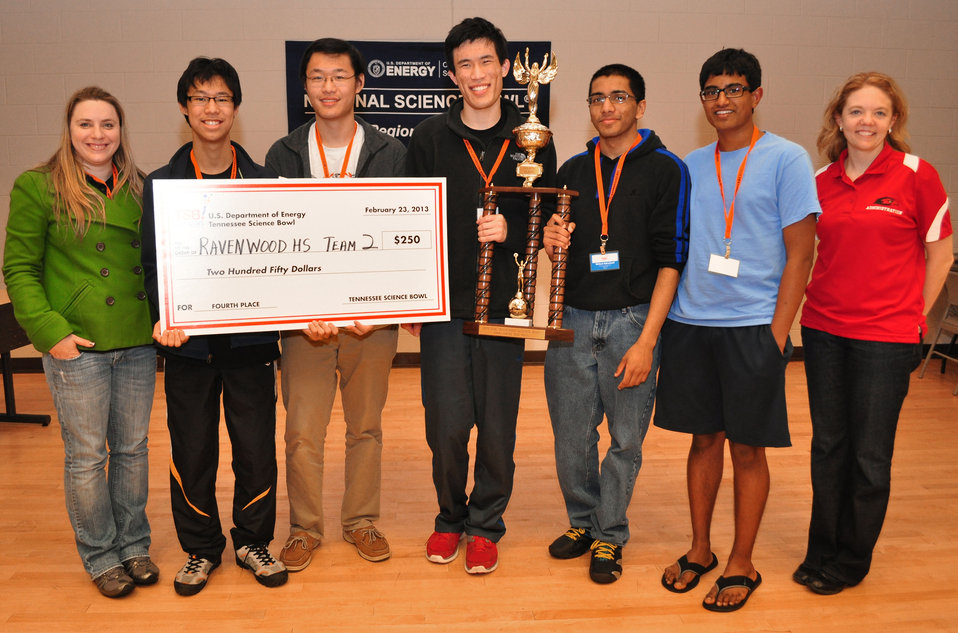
Ravenwood 2 High 4th Place Tennessee Science Bowl 2013

13-010 DOE photo Lynn Freeny 2-23-2013 Left to right Coach Avrill Buerstetta,Jordan Widjaja, Gene Li, Eric Yang, Nishant Subramani, John Asirvatham, Amy Maffei Maryville Tennessee